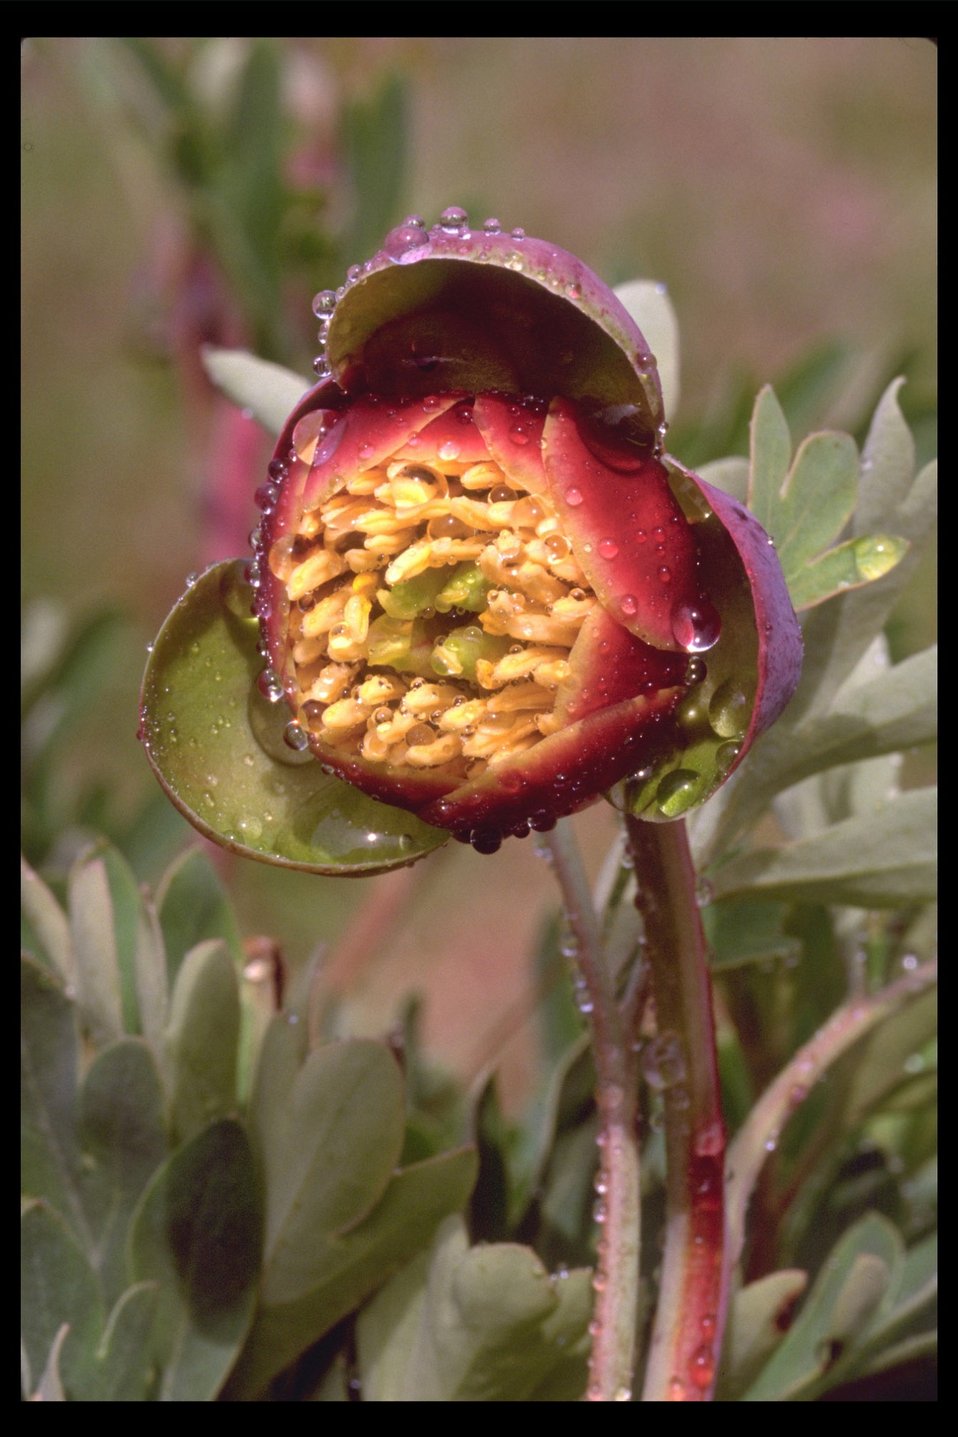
Western Peony (Paeonia brownii) along Crowfoot Road near Lost Creek Lake.